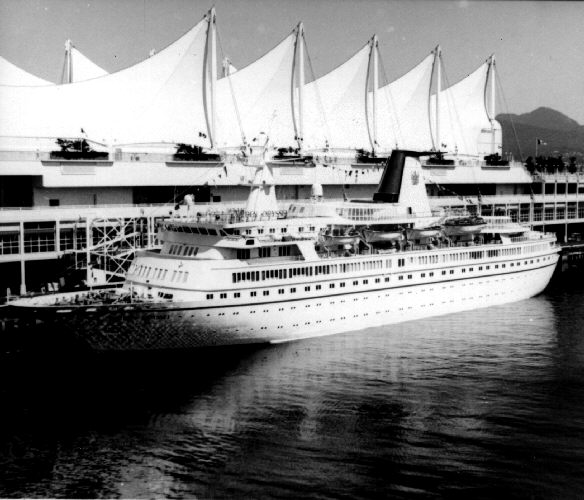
Cruise Ship